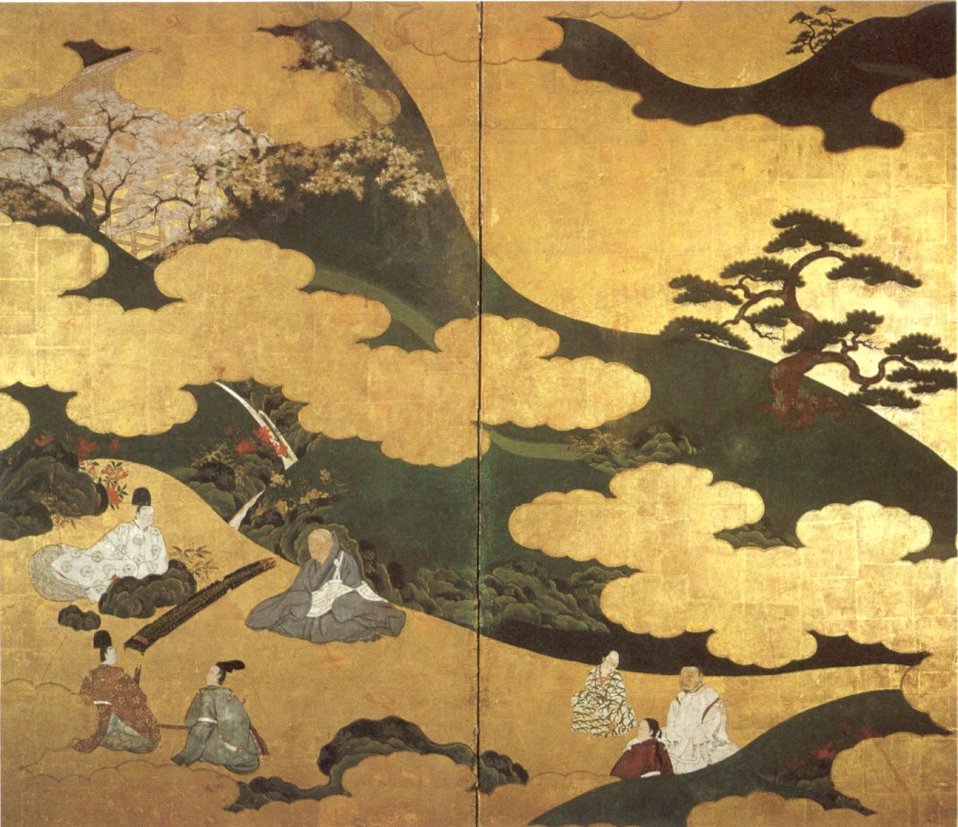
Genji Monogatari (Tale of Genji), ink and color on gold paper mounted as a two-panel screen attributed to Tosa Mitsuyoshi, 16th or early 17th century Japanese, Honolulu Academy of Arts